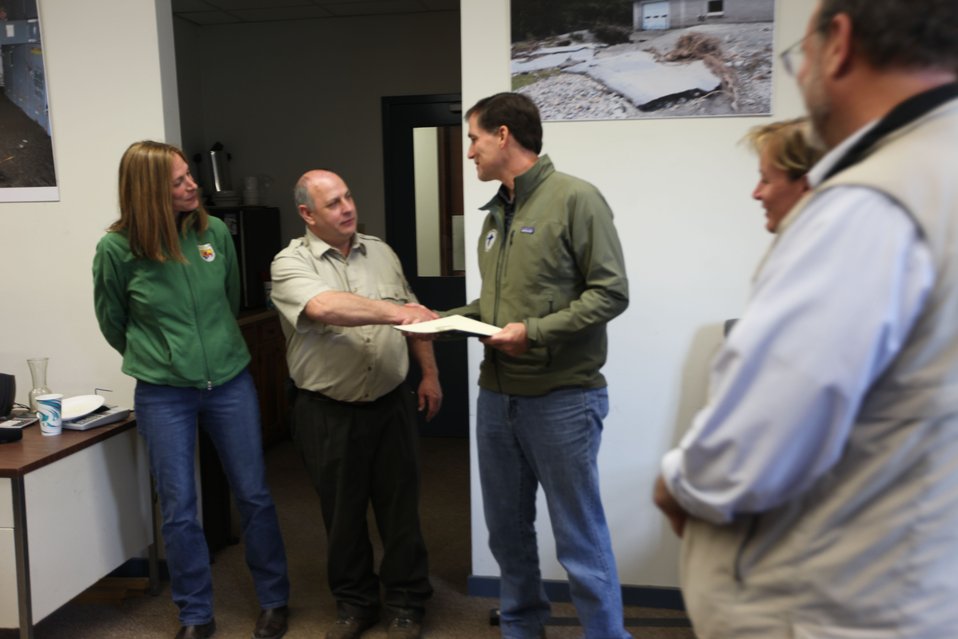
Dan Ashe awards Les Miller

U.S. Fish & Wildlife Service Director Dan Ashe visits the Northeast Region
for a tour of the White River National Fish Hatchery in Bethel, Vermont on
April 27, 2012. The hatchery was devastated by Tropical Storm Irene and
Dan Ashe had the chance to meet and thank the staff for their heroic work.
Director Ashe also visited restoration/flood response/fish passage project
sites in Rochester, Vermont and met with local officials and staff from the
White River Partnership.